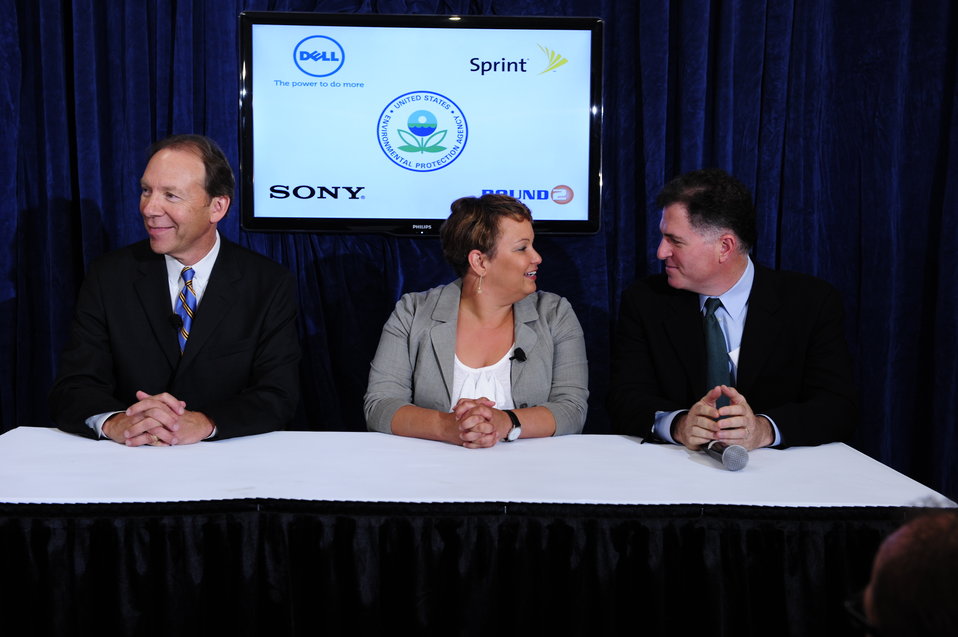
July 20, 2011-Dell and Sprint make voluntary commitments to promote electronics recycling

Administrator Jackson signed a voluntary commitment with Dell Inc. CEO Michael Dell and Sprint CEO Dan Hesse to promote a U.S. based electronics recycling market that will protect people’s health and create good jobs here at home. Pictured (L-R): Dan Hesse, Lisa Jackson, Michael Dell.

To download this image:
1. Right-click the image and under 'View all sizes,' choose 'original'
2. Select the link to 'Download the original size of this photo'